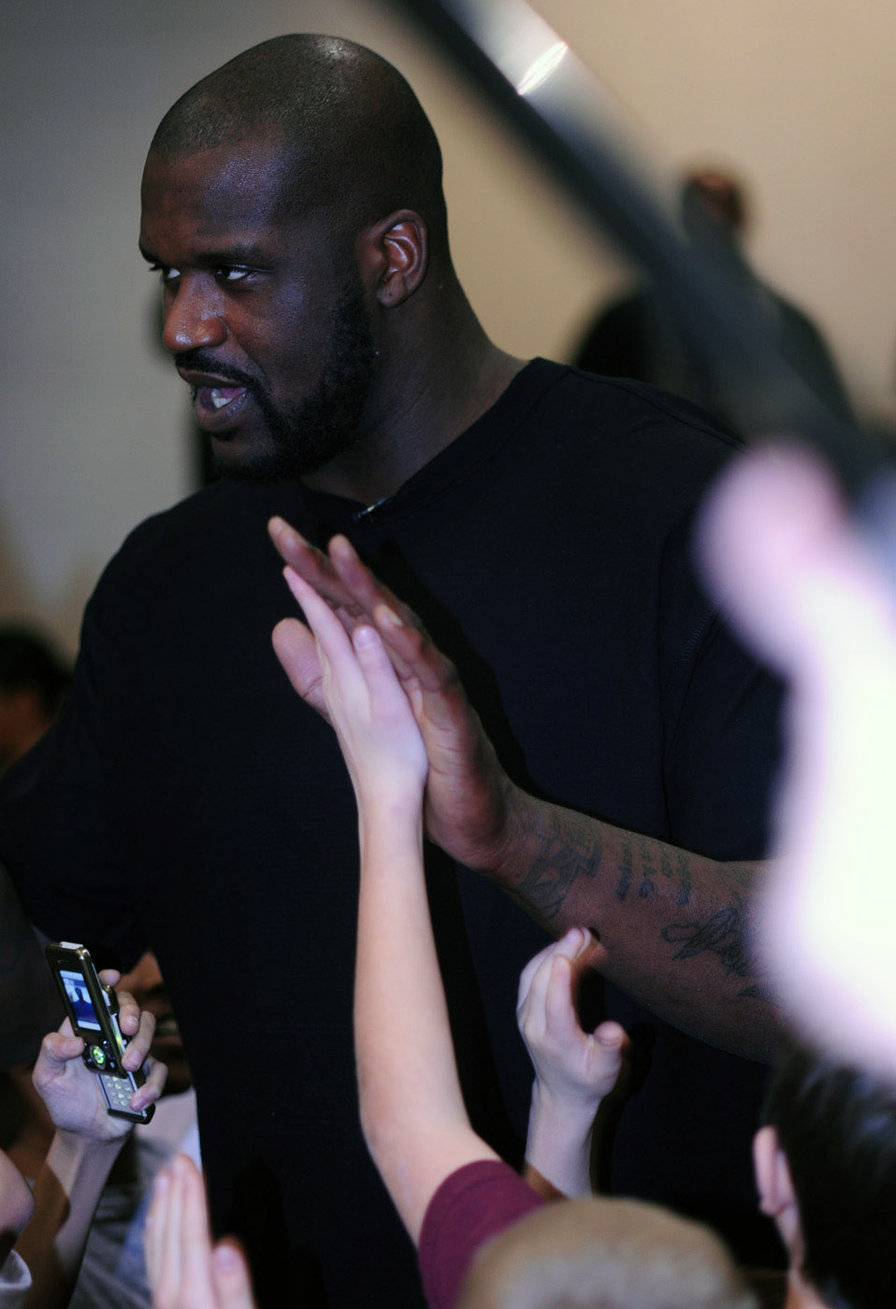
Shaq shares hoops clinic with Buckley children

Shaquille O'Neal of the Phoenix Suns high fives some of the more than 265 children of military members during a basketball clinic Jan. 14 at the fitness center on Buckley Air Force Base, Colo.